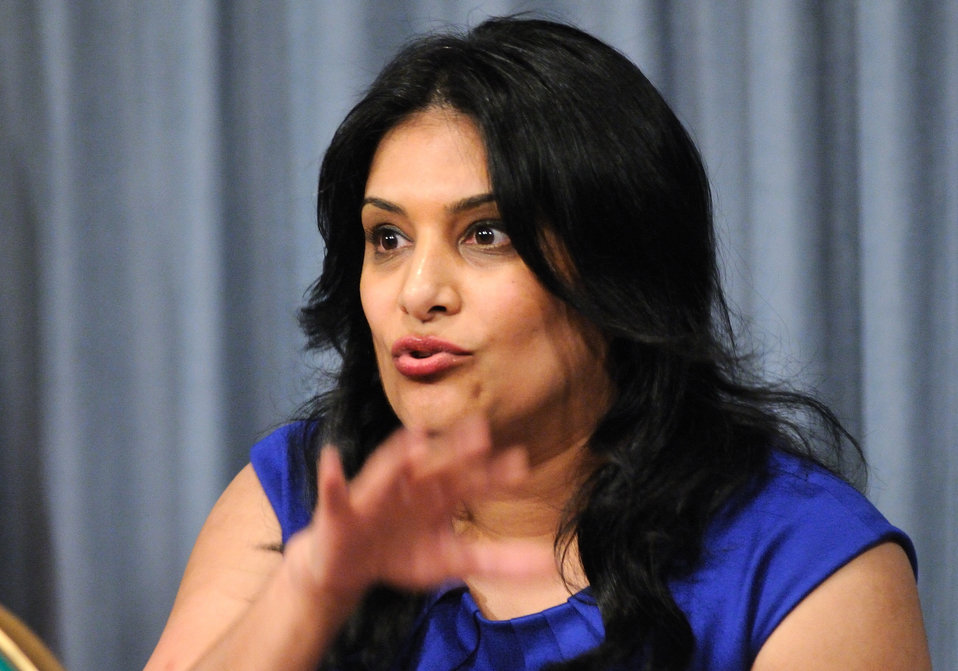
AAPI Heritage Month 2011 (7)